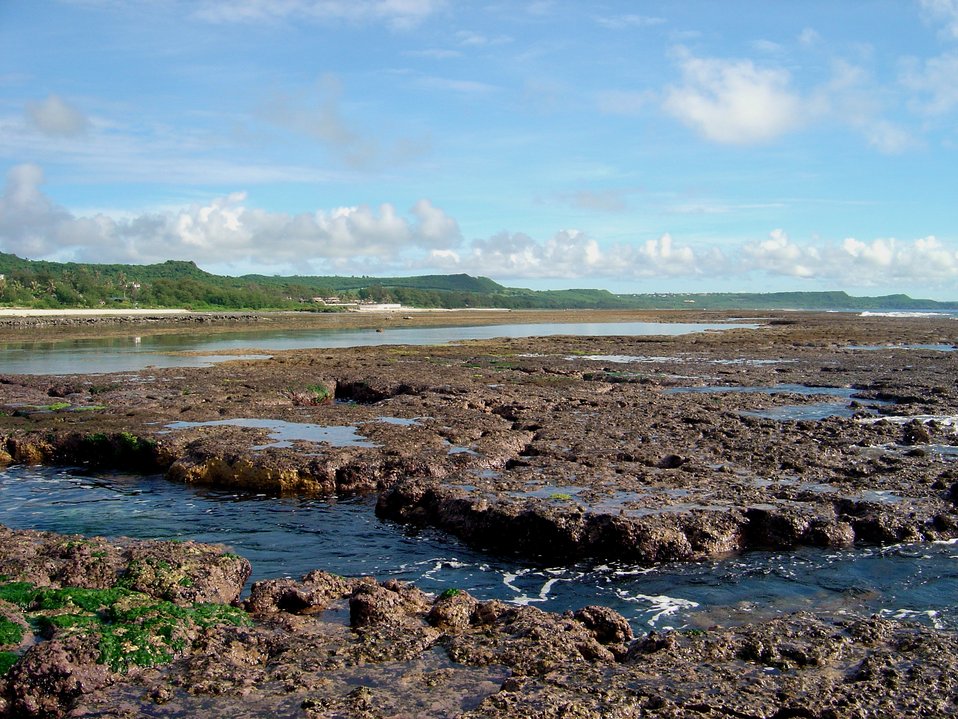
Uncovered reef flat with intervening channels at low tide on the Guam coastline.